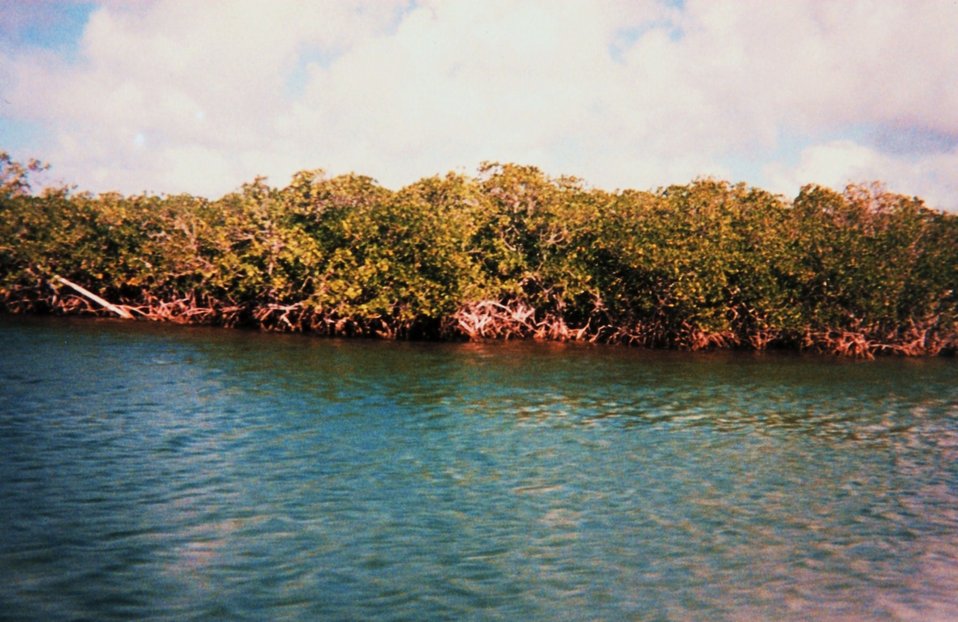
Typical red mangrove with prop roots - characteristic of high salinity area